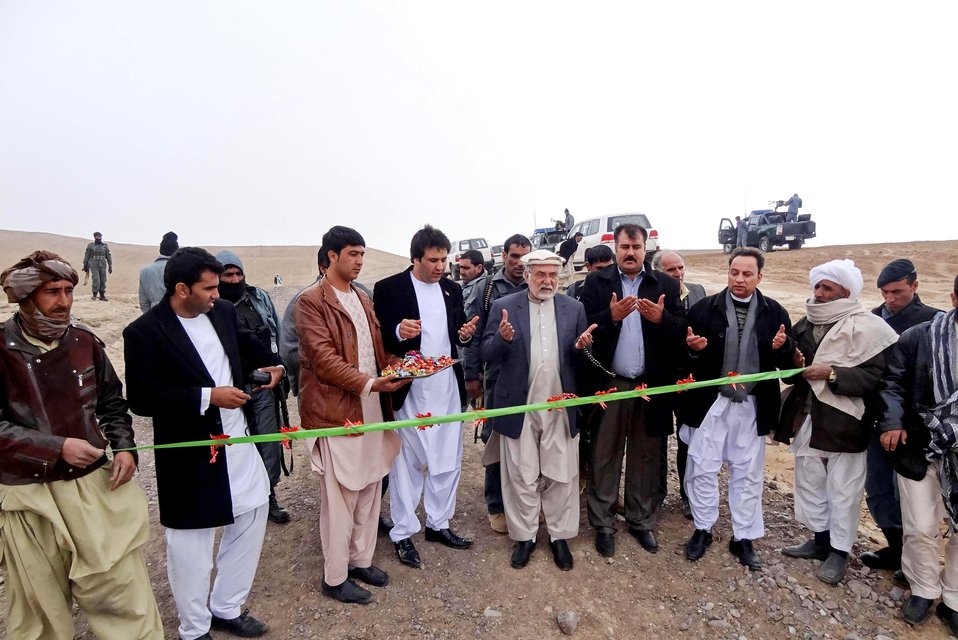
The Herat Provincial Governor and the Kushk Rabat-e Sangi District high officials cut the ribbon to inaugurate the road rehabilitation project in Khowja Gul Baidak village on December 15th